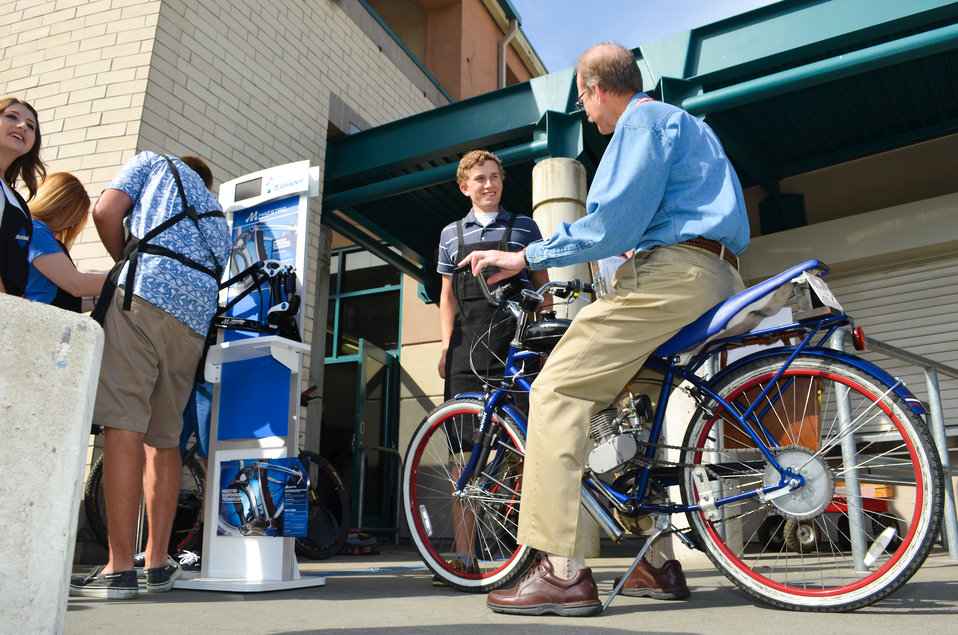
Brad Call sits on a motorized bicycle

Brad Call, a design chief with the U.S. Army Corps of Engineers Sacramento District, tests out a motorized bicycle prior to offering constructive feedback during Folsom High School's seventh-annual Engineering Challenge April 11, 2014, in Folsom, Calif. Student projects included: hovercrafts, catapults, Tesla coils, electromagnetic propulsion devices, pneumatic wind turbines, voice synthesizers, hydrogen fuel cells, solar electric boats and cars, gene transformation, and orthopedic implants.